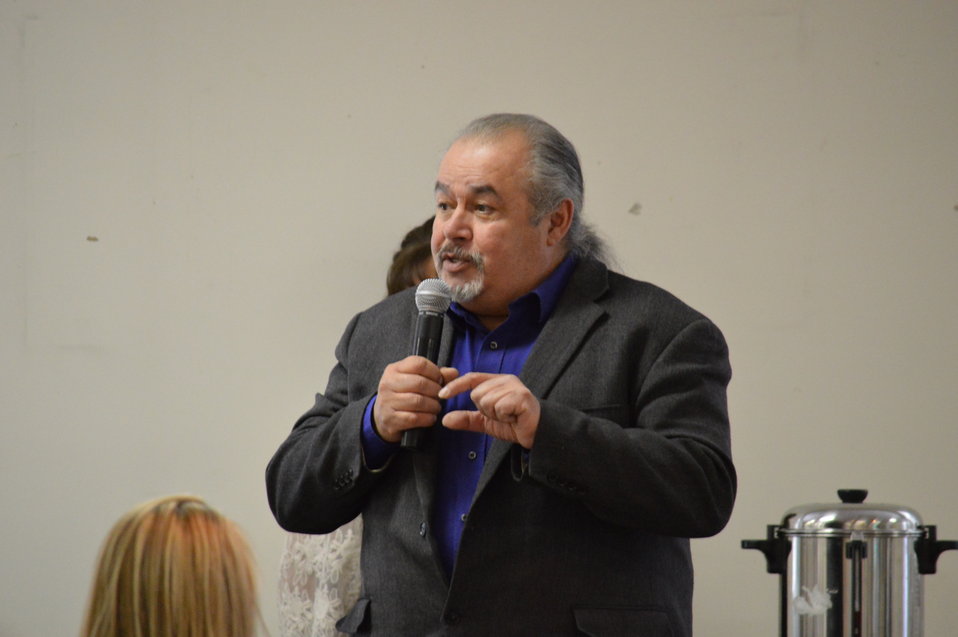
Eagle Summit III

Questions and comments are raised at the Eagle Summit III in Denver, Colorado on March 20, 2014 at the Rocky Mountain Arsenal National Wildlife Refuge.